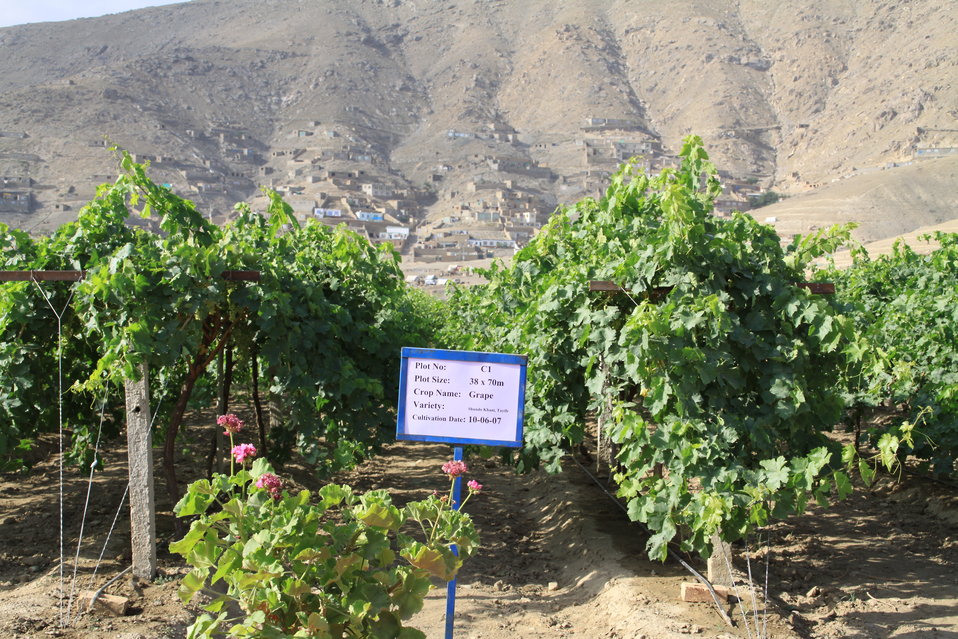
Badam Bagh Farm